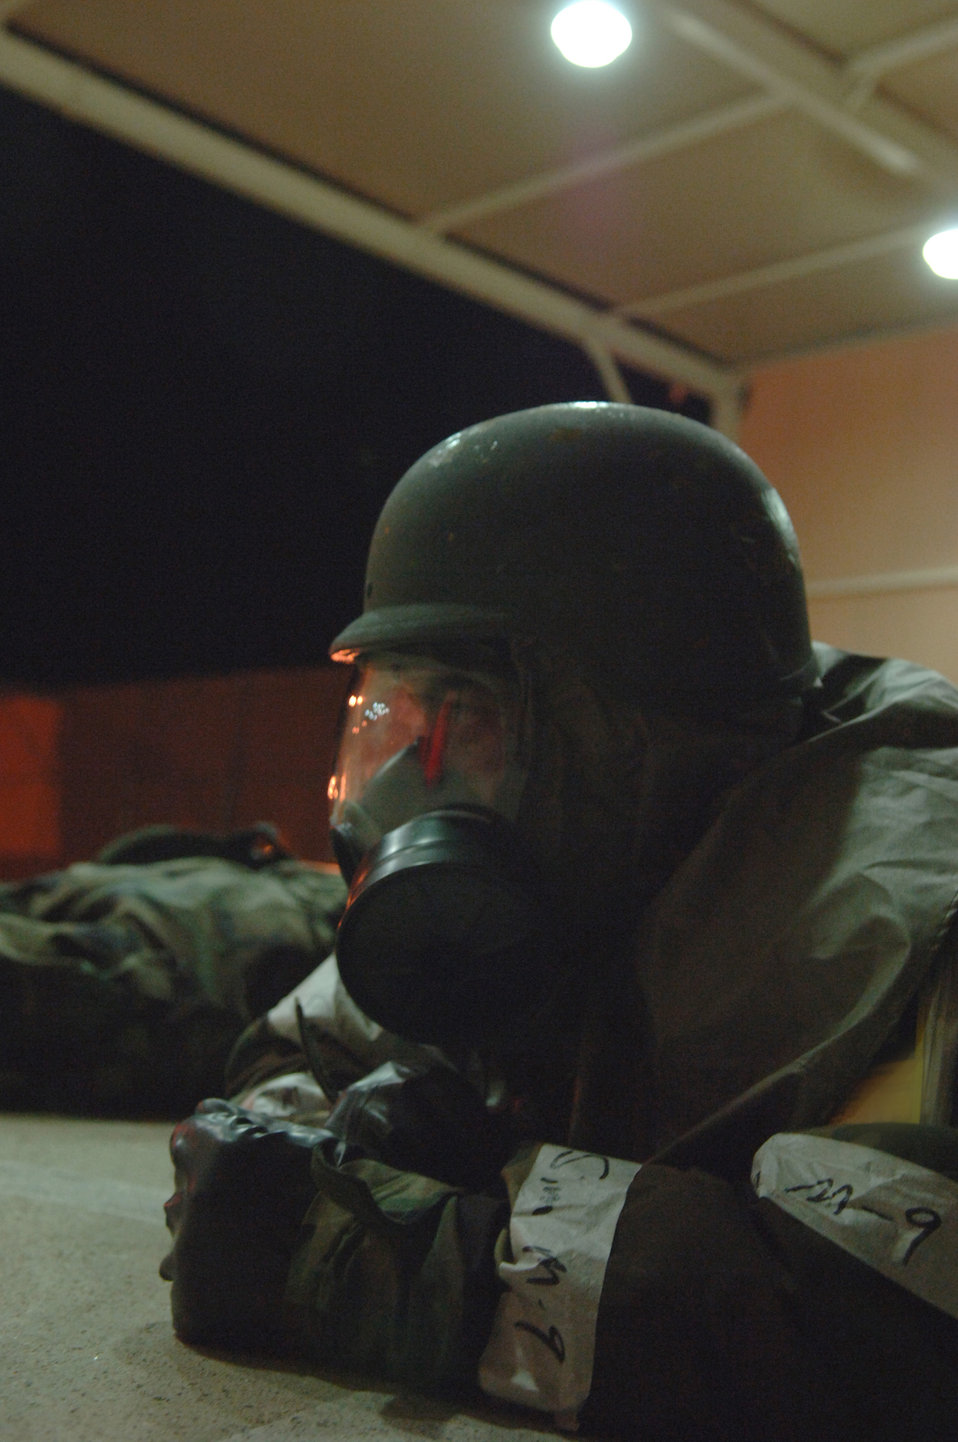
Exercise Bushwacker 06-02

Airmen from the 355th Aircraft Maintenance Squadron take cover on Monday, April 3, 2006, at Davis-Monthan Air Force Base, Ariz. The Airmen are in protective warfare gear as part of a simulated attack during Exercise Bushwhacker 06-02 which tests Airmen on their wartime capabilities.